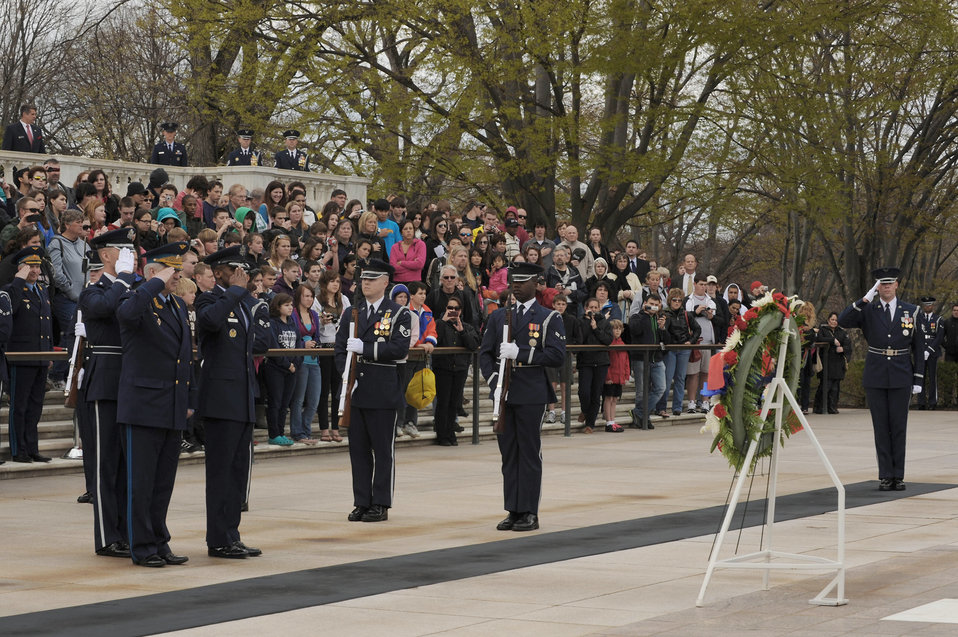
Wreath laying ceremony

Gen. Col. Alexander Nikolyevich Zelin, commander-in-chief of the Russian air force and Maj. Gen. Darren W. McDew, Air Force District of Washington commander, salute during a wreath-laying ceremony at the Tomb of the Unknowns April 5, 2011, at Arlington National Cemetery, Va. The wreath was laid in honor of all fallen service members.